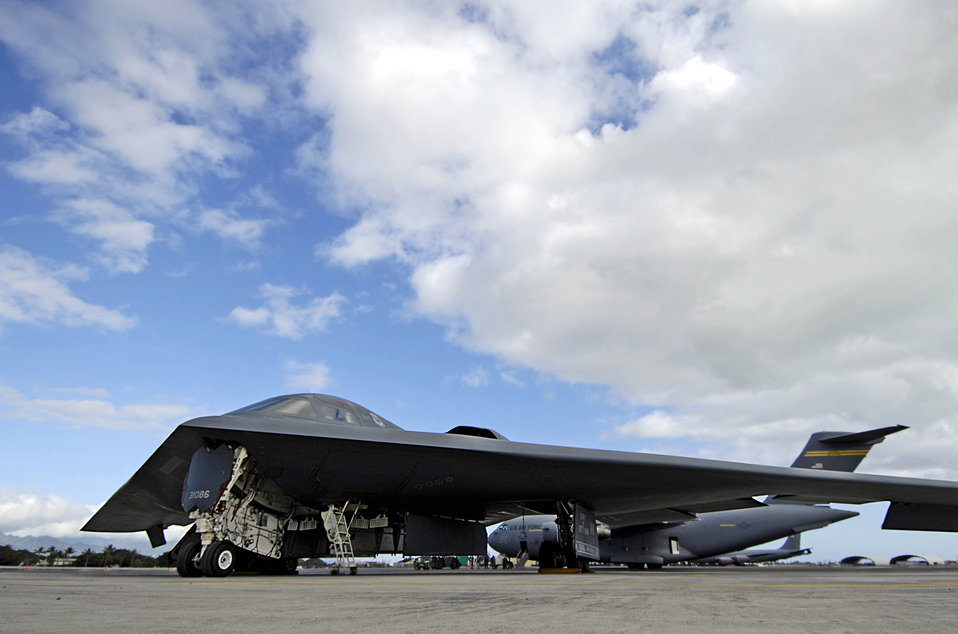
B-2 crashes at Andersen

A B-2 Spirit is shown parked Feb. 12 at Hickam Air Force Base, Hawaii. A B-2 crashed Feb. 23 at Andersen Air Force Base, Guam. The two pilots from the 509th Bomb Wing from Whiteman AFB, Mo., ejected and are in good condition.